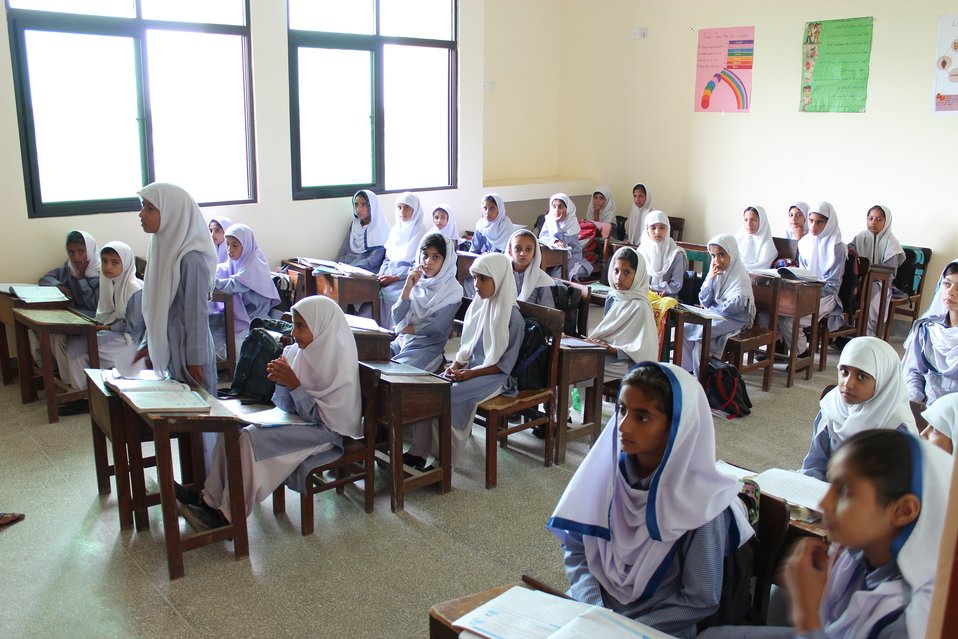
A class in progress at the school

Sept 06, 2012 : Construction (first and second floor) of Tameer-e-Millat Model School for Girls (TMMSG) in village Latwal, of Tehsil Fateh Jhang has been completed and on Sept 06, 2012 Project closing and School opening ceremony was held in which students, teachers, parents and community leaders participated.